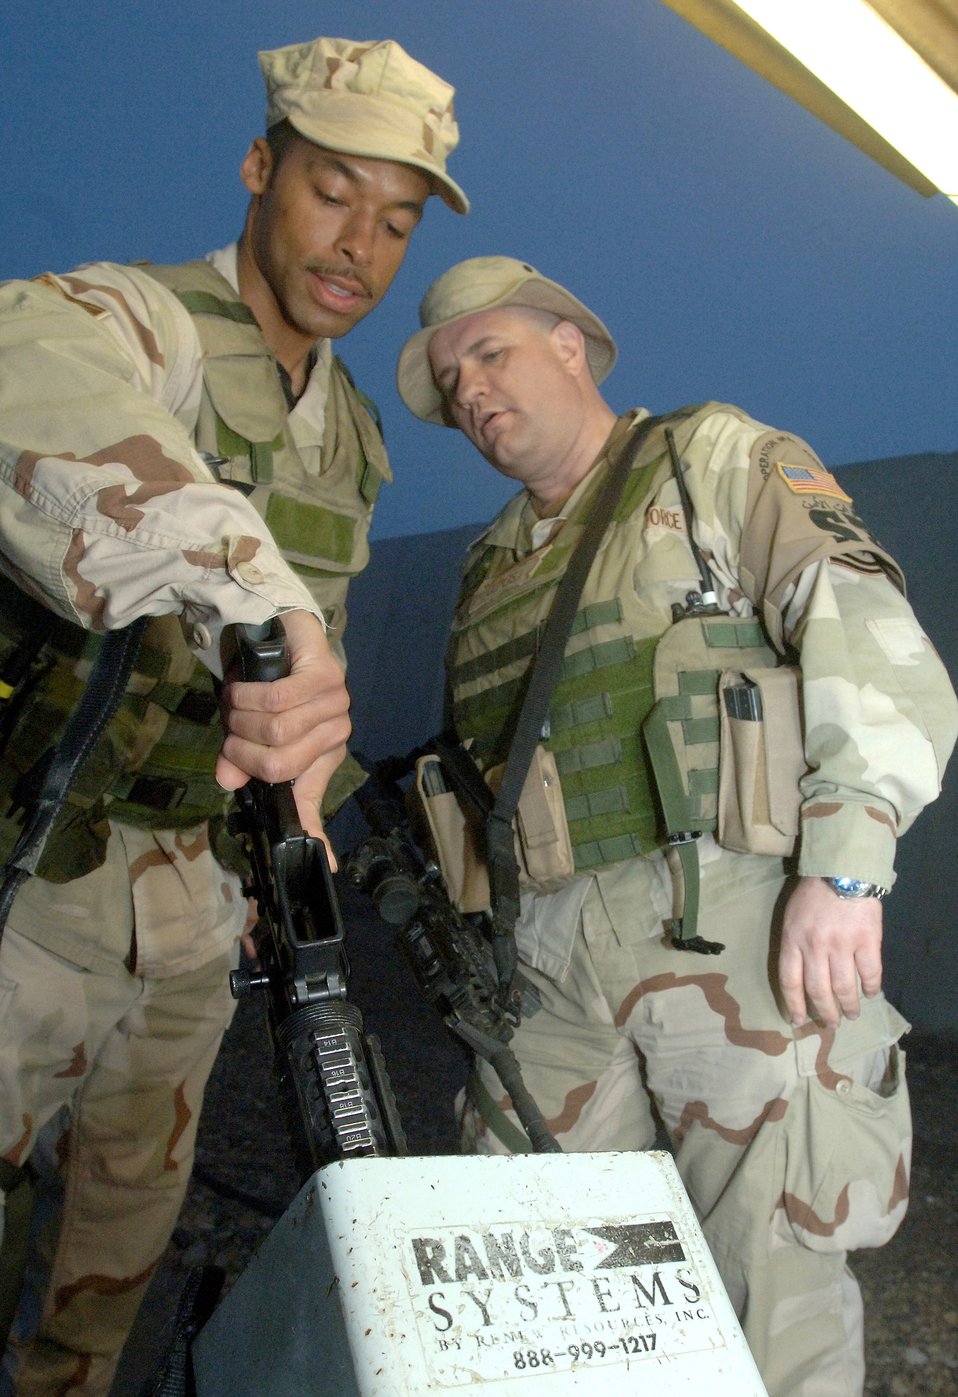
All secure

ALI BASE, Iraq (AFPN) -- Master Sgt. Brian Cottrill oversees proper clearing procedures with Staff Sgt. Tyreese McAllister Feb. 16. Before security forces Airmen are relieved of duty their weapons must be cleared and cleaned before they are returned to the armory. Both are with the 407th Expeditionary Security Forces Squadron.